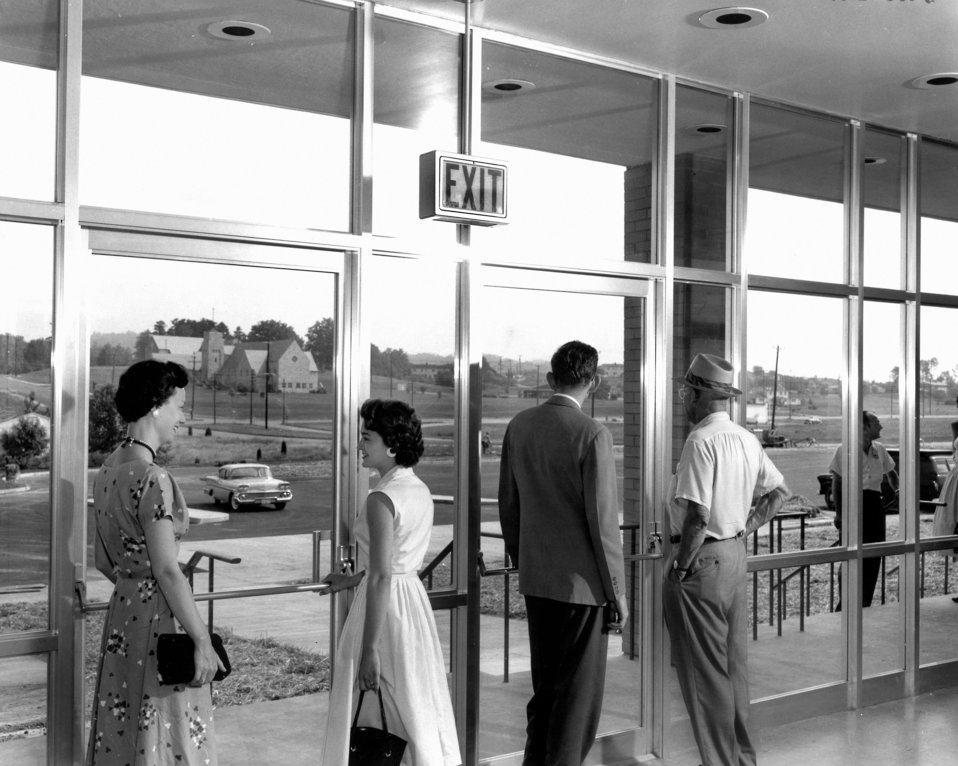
City Municipal Building 1958 Oak Ridge

58-465 DOE photo Ed Westcott 6-6-1958 Oak Ridge Tennessee